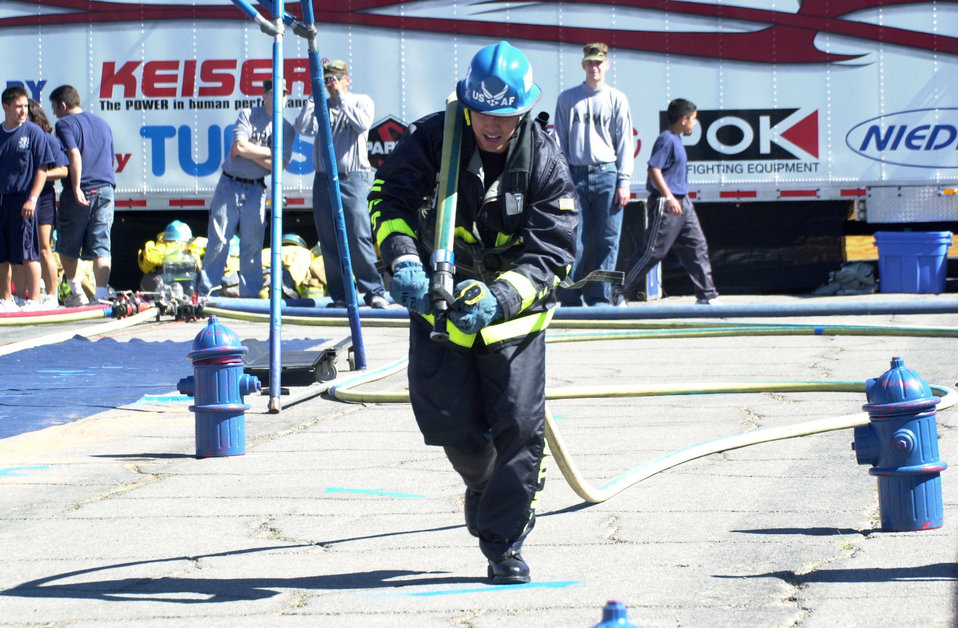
Firefighters up for the challenge

EL PASO, Texas -- Staff Sgt. Frank Abreu drags a fire hose during a relay competition at the U.S. National Firefighter Combat Challenge Championships here Oct. 23. Sergeant Abreu is from Travis Air Force Base, Calif.